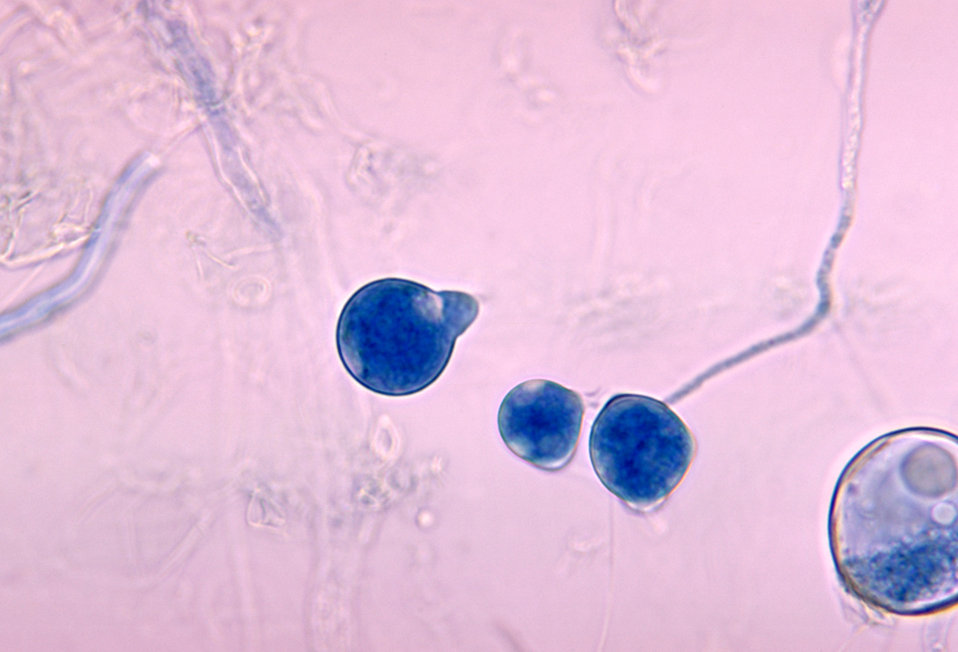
This photomicrograph shows a number of sporangia of the fungus Basidiobolus meristosporus.